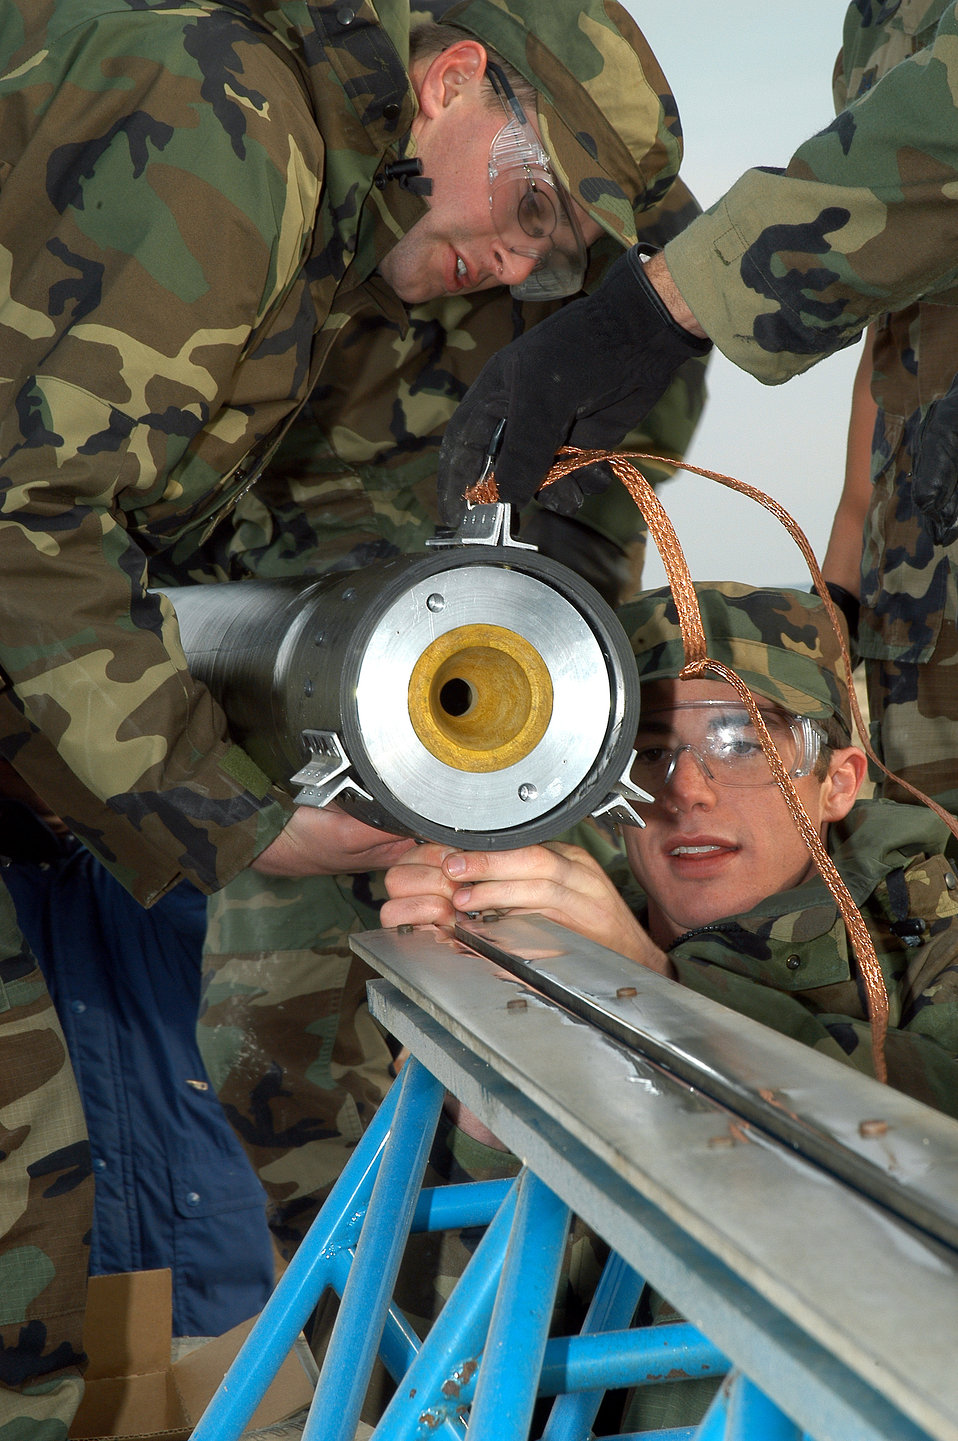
Rocket launch

FORT CARSON, Colo. -- Air Force Academy engineering students load a rocket onto the launch rail. The cadets taking Astronautical Engineering 452/453 Rocket Engineering classes completed their project April 25 by successfully firing the 11.5-foot tall, 7-inch diameter projectile from the Pinon Maneuver area here.